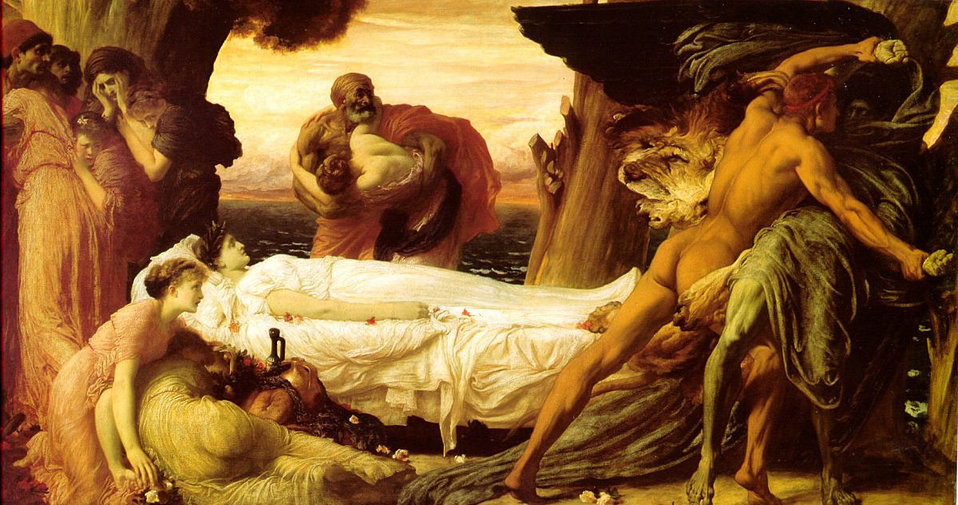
AlcestisHerculesLeighton